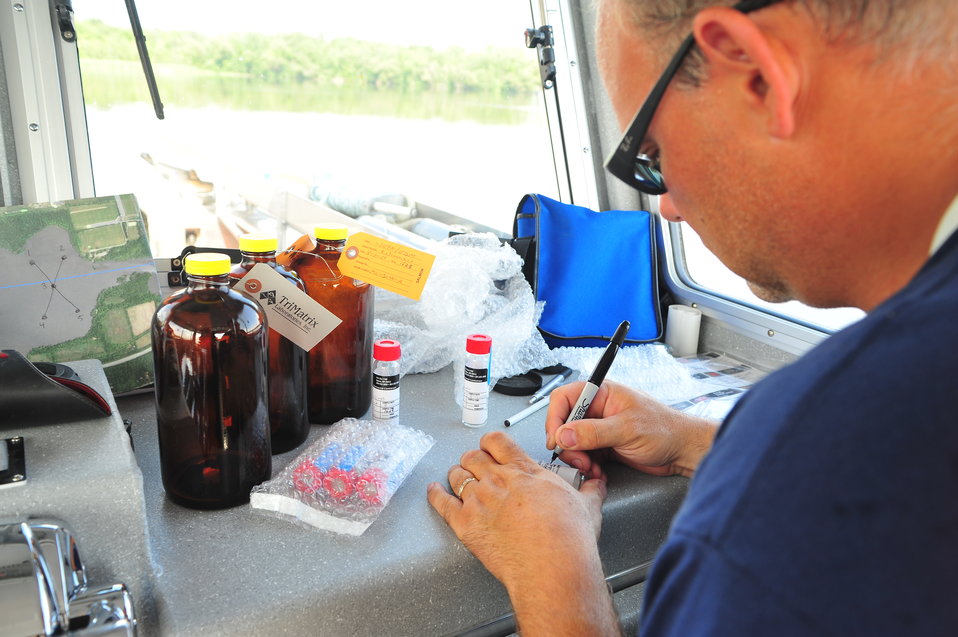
EPA's response to the Enbridge oil spill

August 2, 2010 - Water and sediment sampling operations during Enbridge Spill Response on Morrow Lake near Battle Creek, Michigan from Mudpuppy II, EPA's news research vessel.